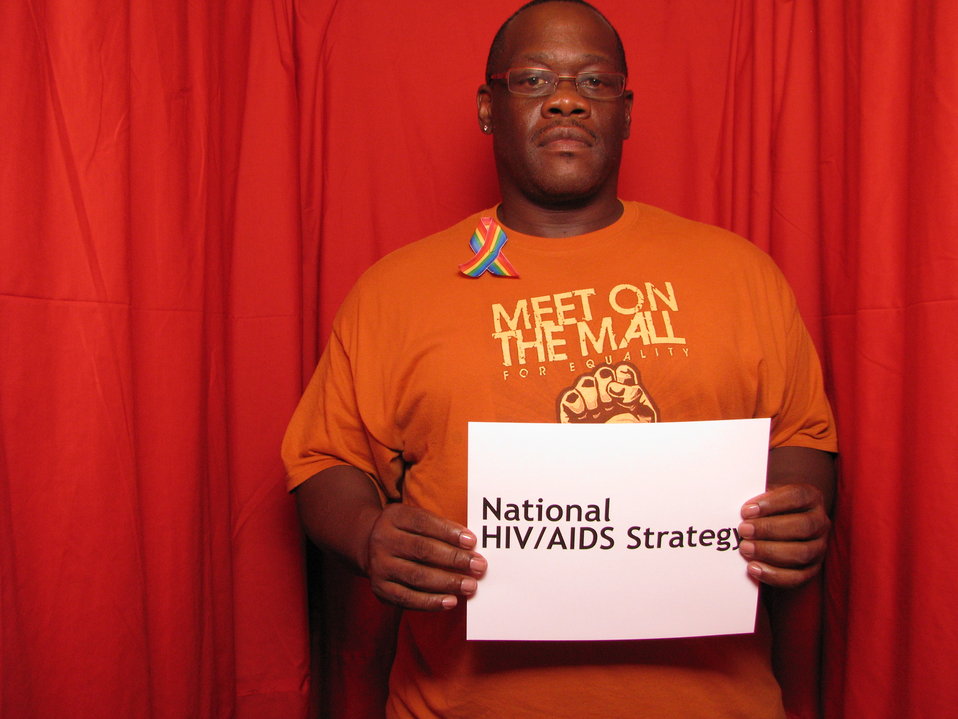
National HIV/AIDS Strategy

From the AIDS.gov photo booth at the U.S. Conference on AIDS, September 2010 (Orlando, FL).